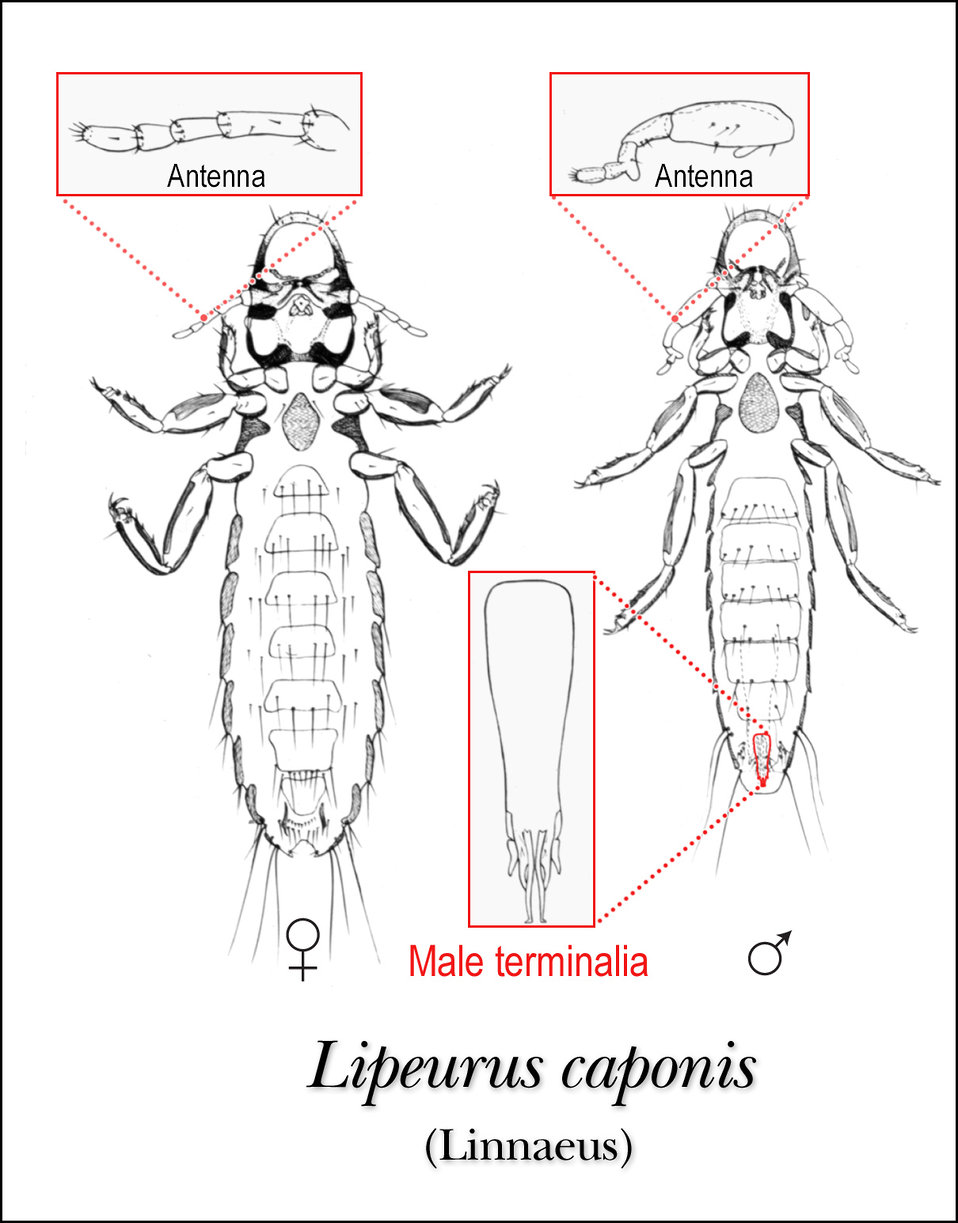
This illustration depicts the ventral features of the male and female louse, Lipeurus caponis.